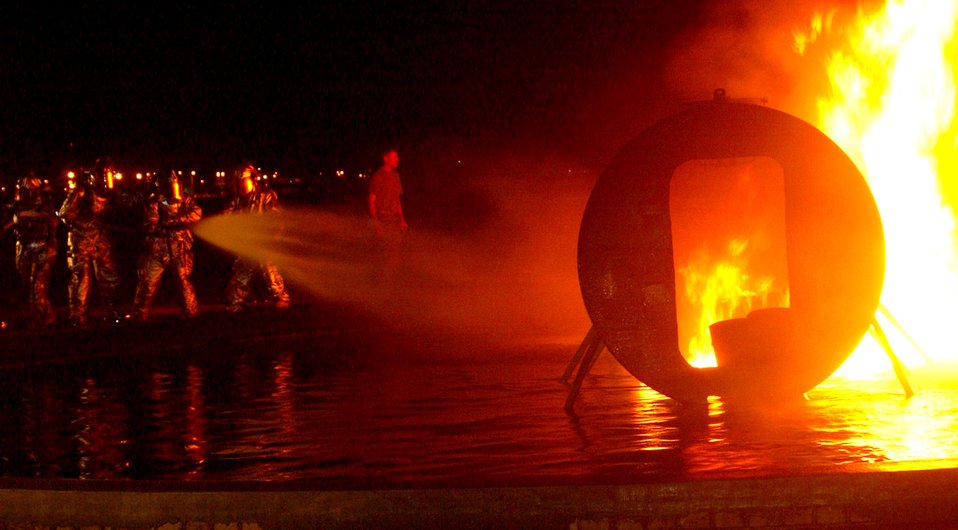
Marines turn up the heat for Airmen on Okinawa

MARINE CORPS AIR STATION FUTENMA, Japan -- Kadena fire emergency services Airmen work together to extinguish a fire on a simulated crash at a fuel fire pit here Sept. 22. The 18th Civil Engineer Squadron Airmen used the Marine facility for training while theirs is undergoing maintenance.